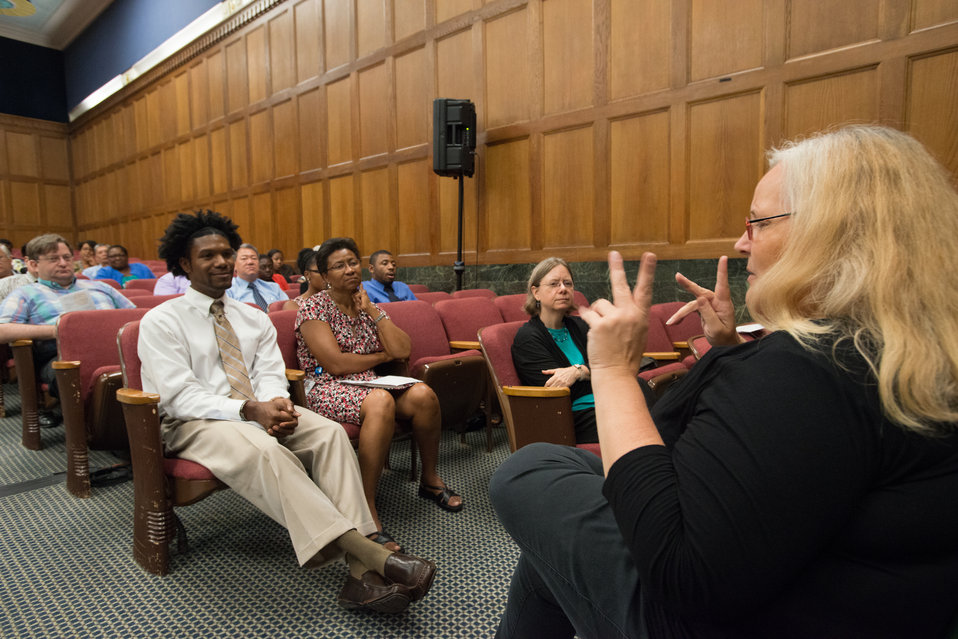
An American Sign Language (ASL) interprets An American Sign Language (ASL) interprets U.S. Department of Agriculture (USDA) Rural Development (RD) Deputy Under Secretary Patrice Kunech remarks to hearing impaired U.S. Department of Agriculture (USDA) employees during the USDA’s Rural Development (RD) 2nd Annual Cultural Transformation kickoff opening ceremony and forums, themed “Employees Influencing Change,” on Tuesday, Aug. 13, 2013 USDA in Washington, D.C.